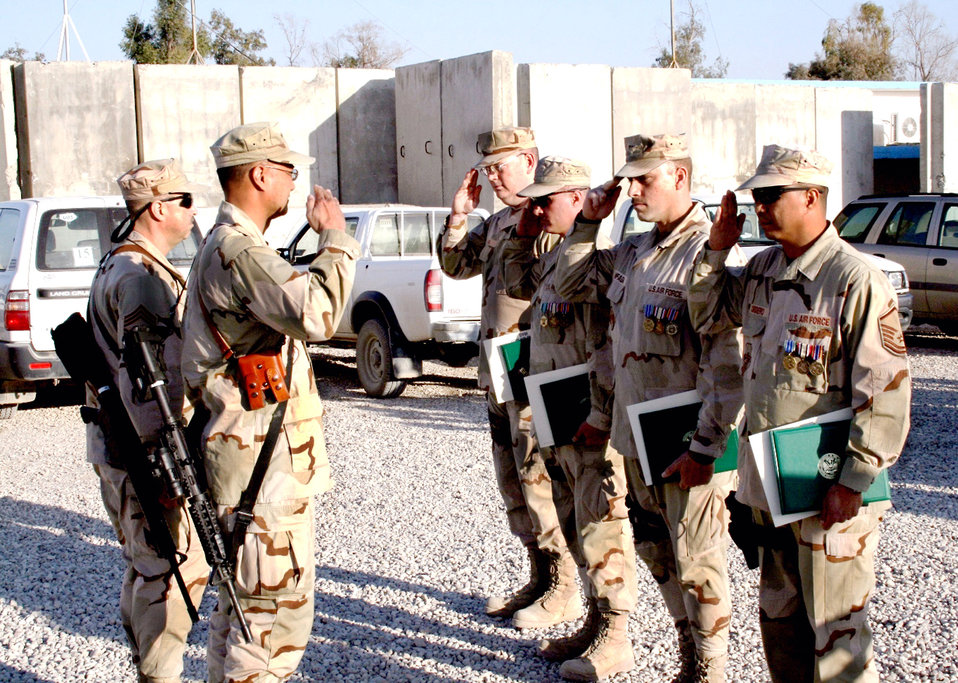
Airmen receive awards for successful combat tours

(From left) Master Sgts. Kenneth Hans, John Murrell, Ralph Zanfagna and Jaime Cordero, Jr., salute Lt. Col. Geoffrey Ellazar, 732nd Expeditionary Support Squadron commander, after receiving Iraqi Campaign and Air Force Expeditionary medals. The sergeants were administratively assigned to the 732nd EMSG and operationally attached to the Army's 403rd Civil Affairs Battalion.